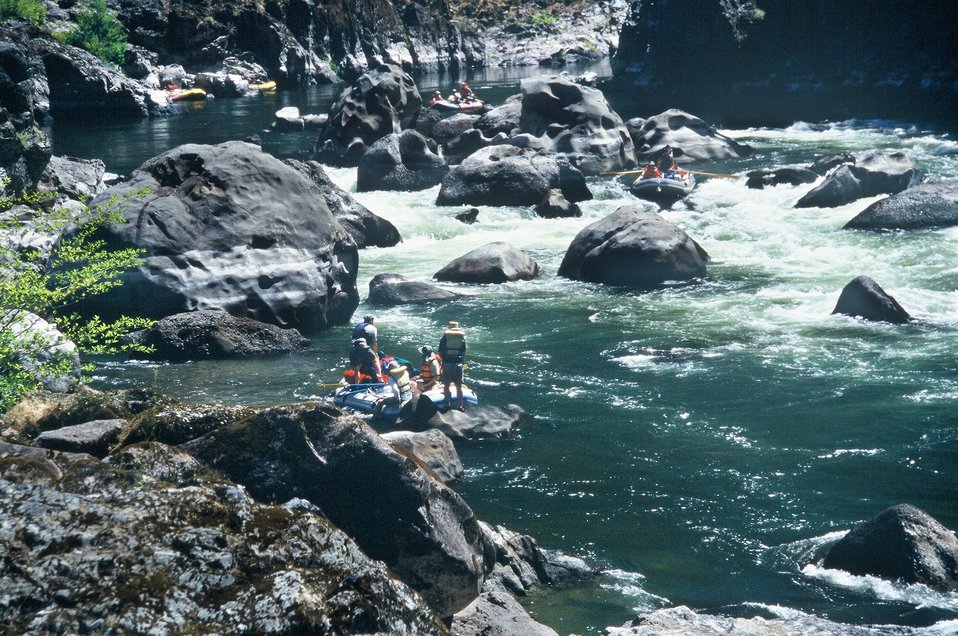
Blossom Rapids